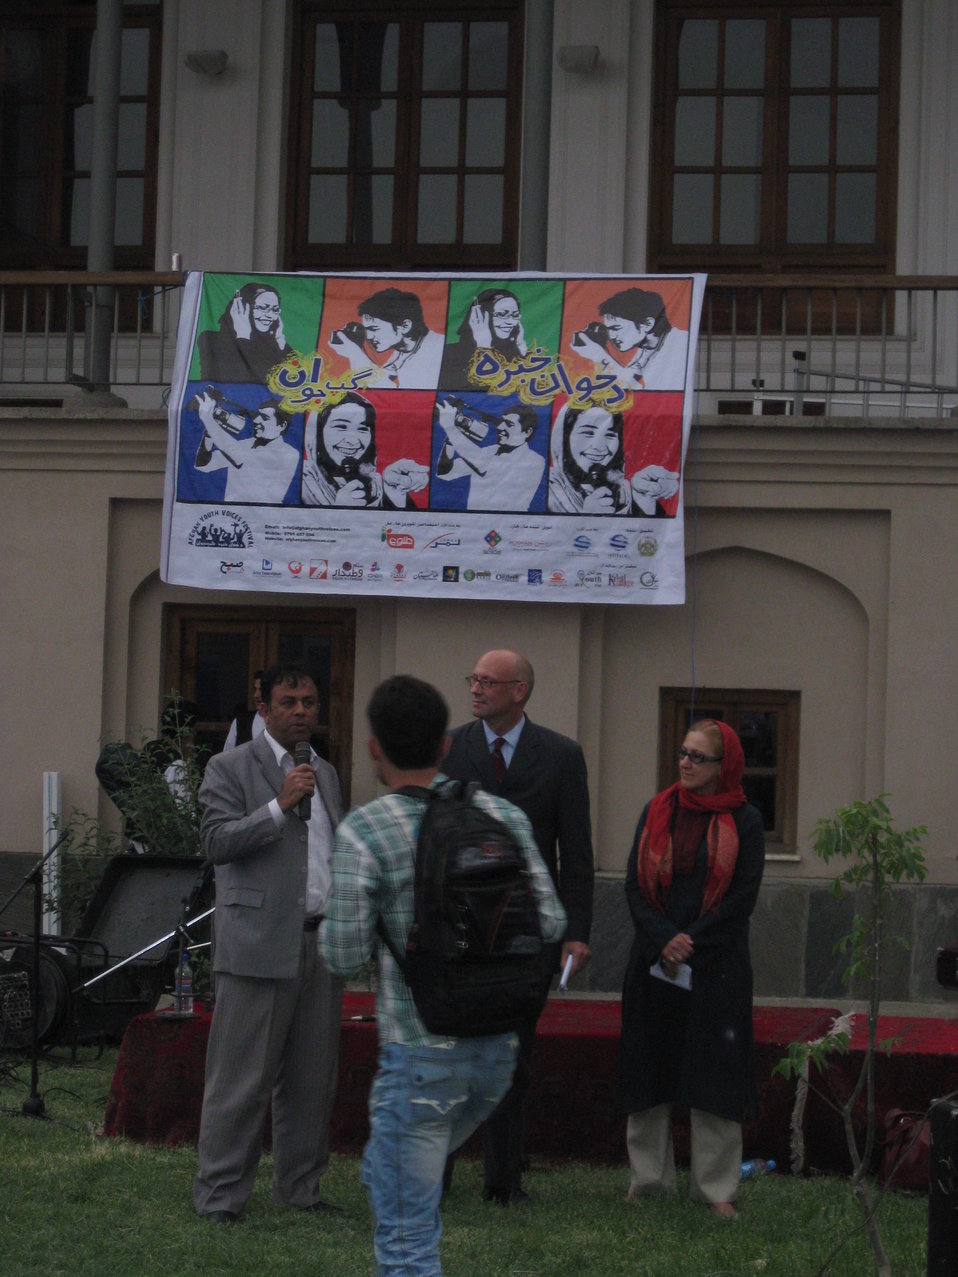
Afghan Youth Voices 114